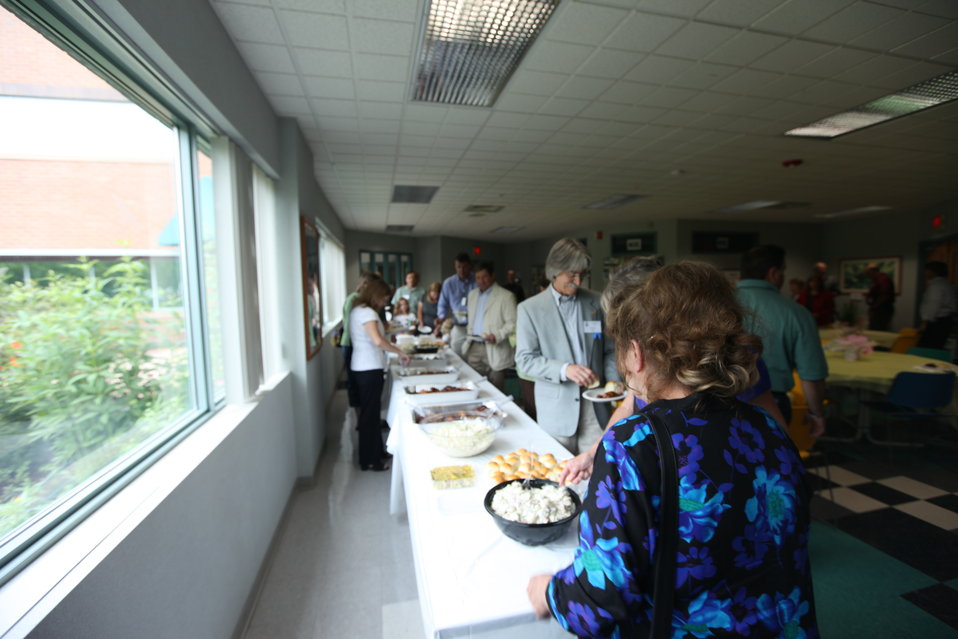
Northeast Region Employee Appreciation Awards

Luncheon